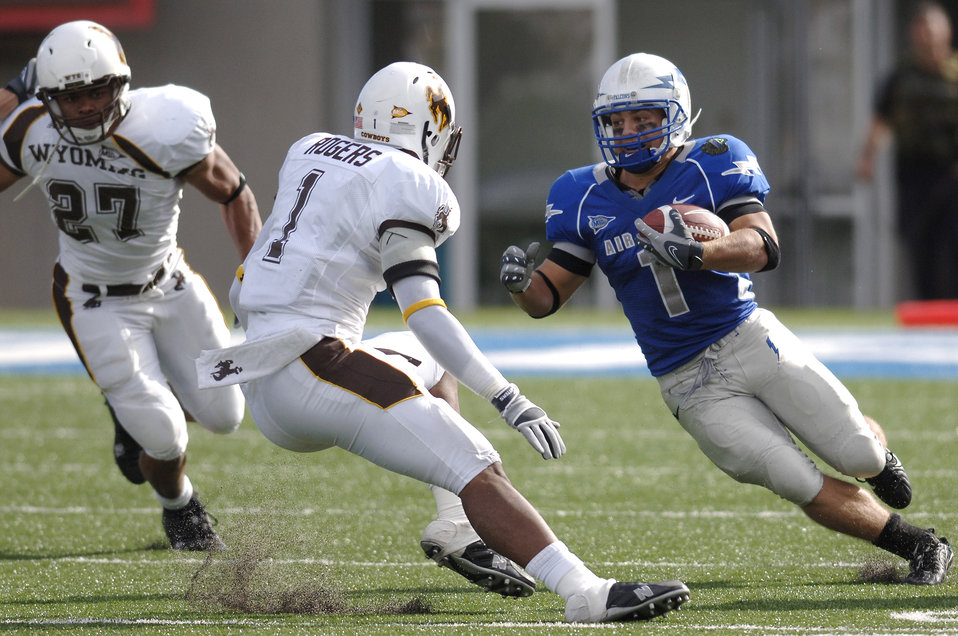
Football: Falcons bowl-eligible after win over Wyoming

U.S. Air Force Academy Falcons z-back Chad Hall cuts back against Wyoming safeties Quincy Rogers and Michael Ray, 27, during Air Force's 20-12 win Oct. 20 at Falcon Stadium in Colorado. Hall carried 28 times for 167 yards, giving him 592 yards in his last three games.